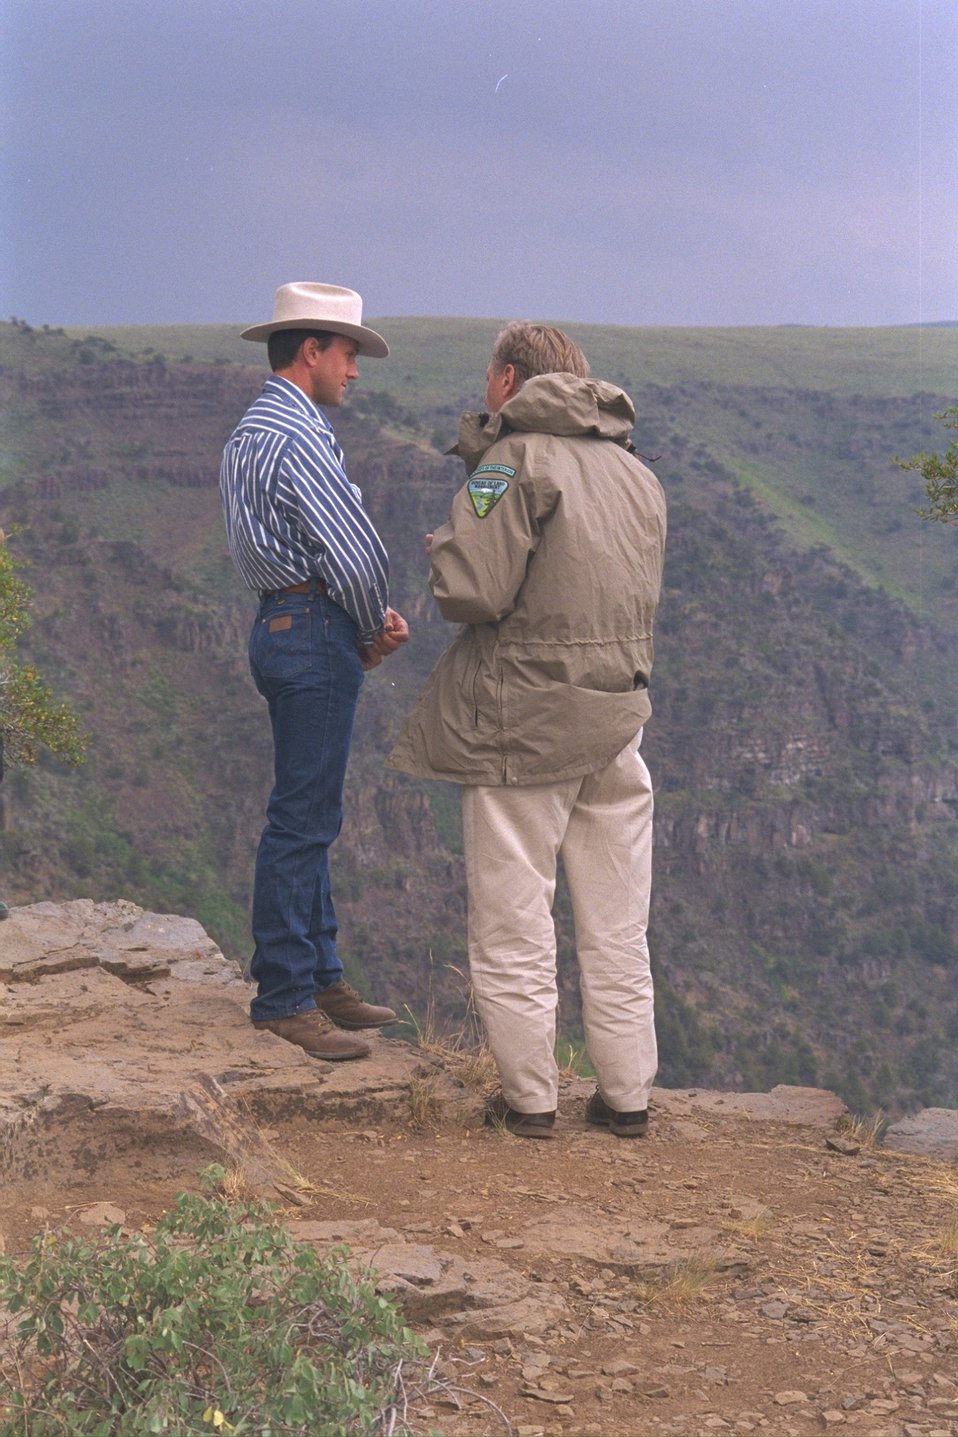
Stacie Davies, the manager of Roaring Springs Ranch, and Secretary Bruce Babbitt at Big Indian Gorge overlook.